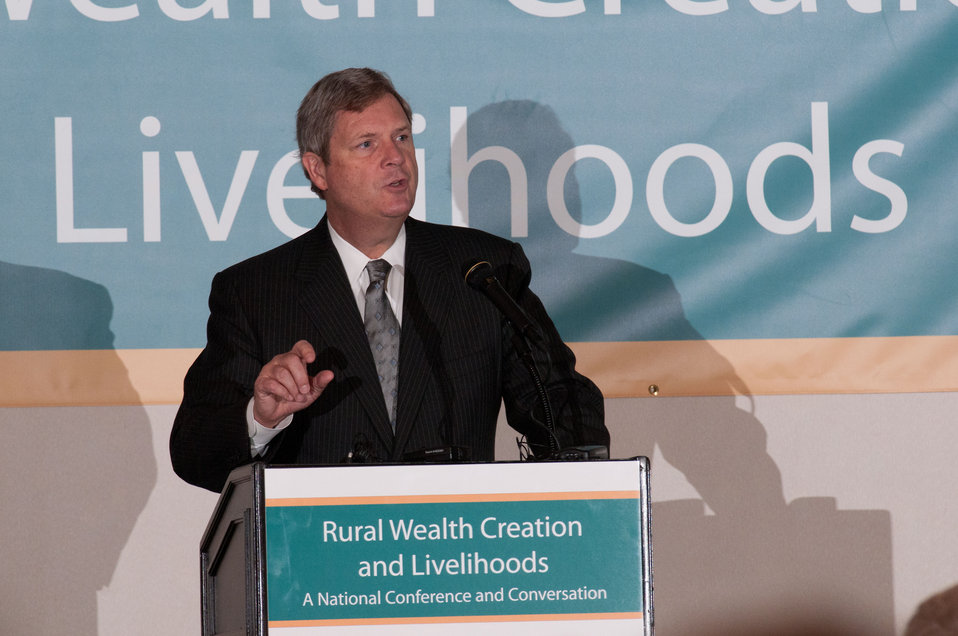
U.S. Department of Agriculture (USDA) Secretary Tom Vilsack was the keynote speaker for the Rural Wealth Creation and Livelihoods national conference for practitioners, researchers and policymakers, held at the Dupont Hotel, Washington DC, on Monday October 3, 2011. USDA partnered with the Ford Foundation to sponsor the conference.